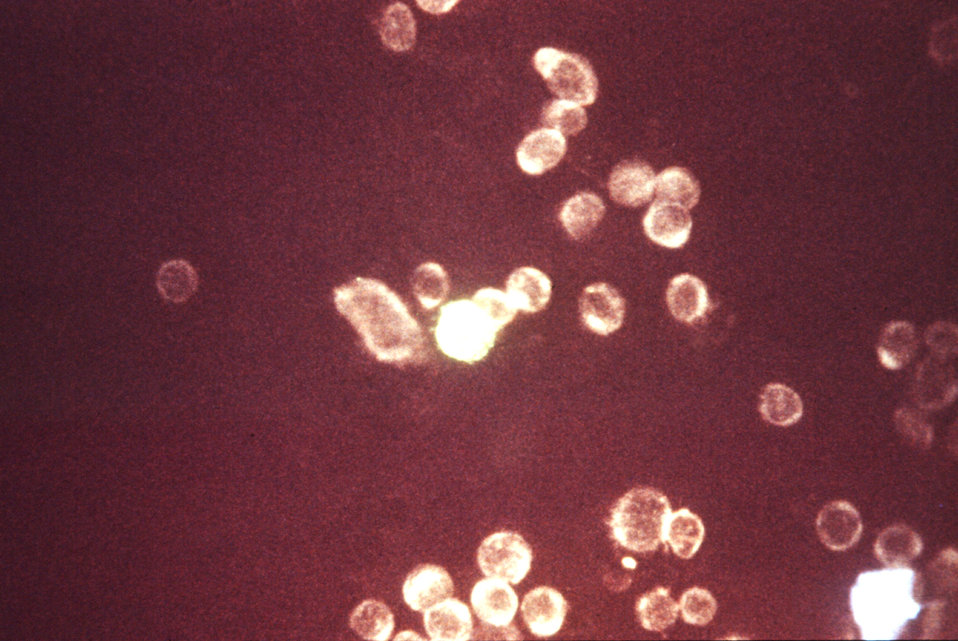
This is a photomicrograph of a herpes smear cell culture using an immunofluorescent technique.